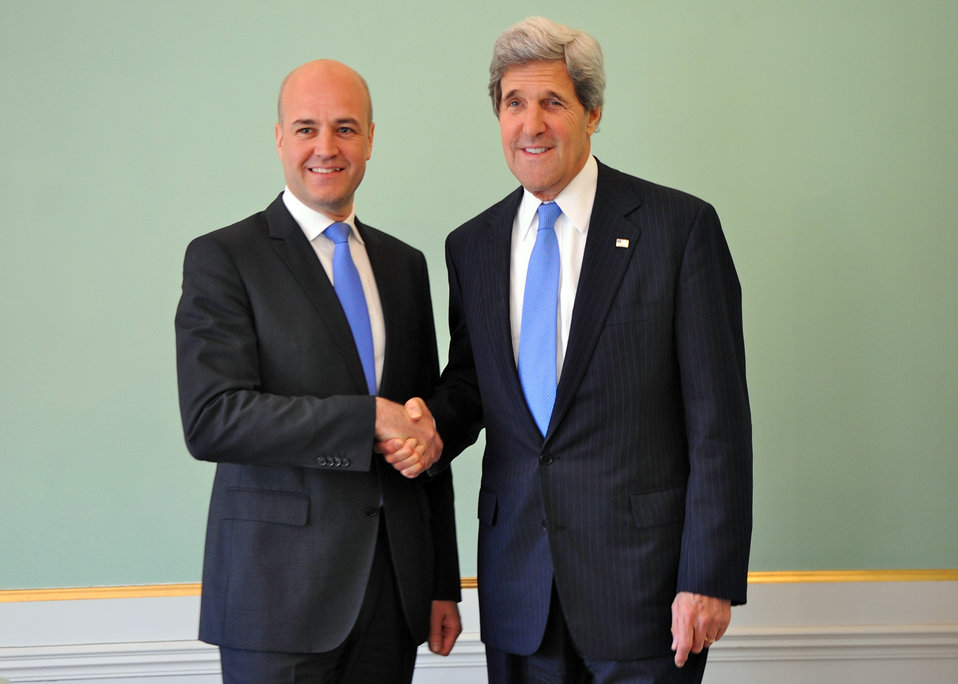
Secretary Kerry Meets With Swedish Prime Minister Reinfeldt

U.S. Secretary of State John Kerry meets with Swedish Prime Minister Fredrik Reinfeldt on May 14, 2013 in Stockholm, Sweden.